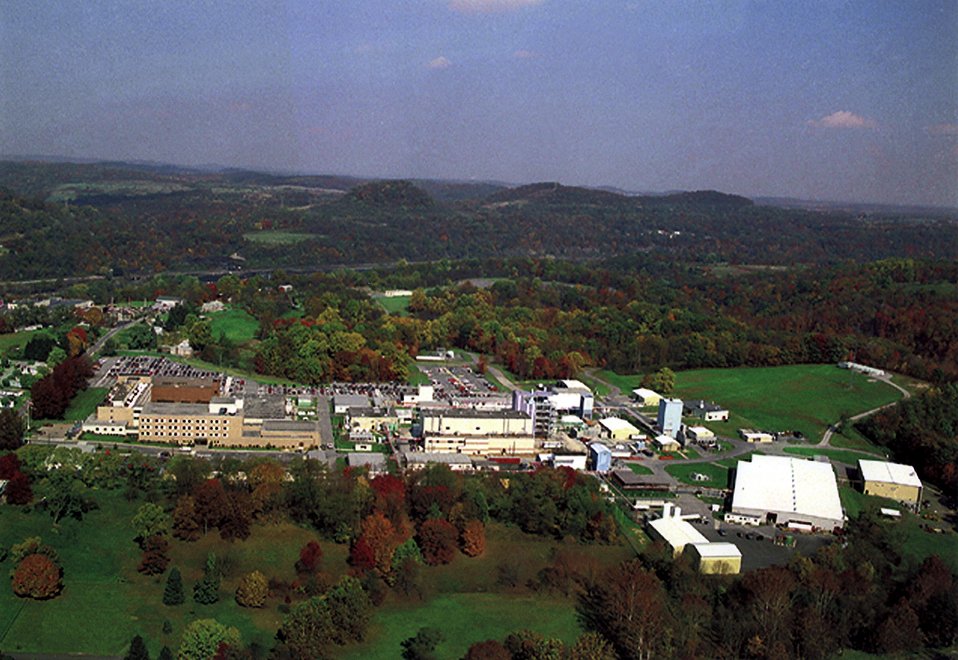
AERIAL VIEW OF THE NATIONAL ENERGY TECHNOLOGY LABORATORY AT MORGANTOWN, WEST VIRGINIA.

DOE'S NATIONAL ENERGY TECHNOLOGY LABORATORY IS A MAJOR RESEARCH AND DEVELOPMENT FACILITY WITH A FOCUS ON DEVELOPING TECHNOLOGIES TO ADVANCE FOSSIL ENERGY EXPLORATION, SUPPLY, AND END-USE TECHNOLOGIES. NETL DEVELOPS TECHNOLOGIES THAT WILL ASSURE THE SAFE, CLEAN, AND AFFORDABLE USE OF U.S. FOSSIL ENERGY RESOURCES OF COAL, NATURAL GAS AND OIL.